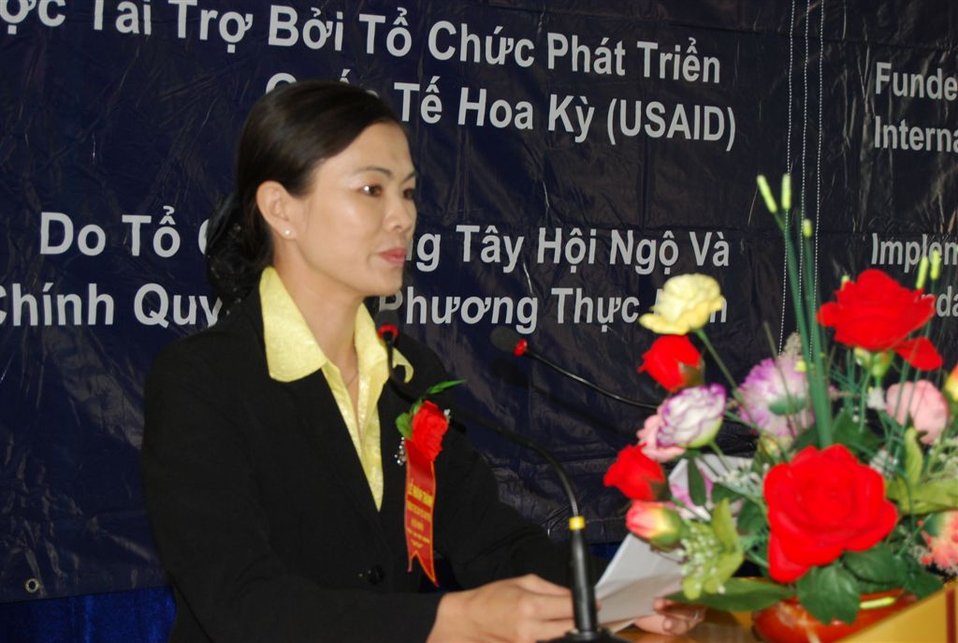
Provincial authorities join in inaugurating the school